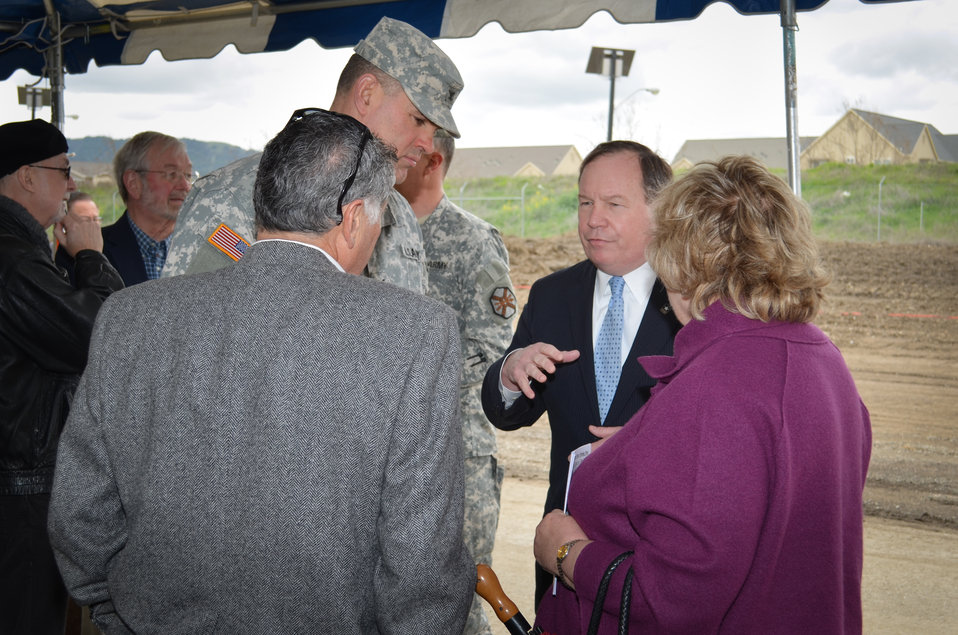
Chief Executive Officer for the U.S. Army Reserve Command

Mr. Addison 'Tad' Davis, IV (center), Chief Executive Officer for the U.S. Army Reserve Command, chats with Col. Bill Leady (left), Commander of the U.S. Army Corps of Engineers Sacramento District, during a groundbreaking ceremony March 6, 2013, at the U.S. Army Garrison Camp Parks Reserve Training center in Dublin, Calif.
The district's real estate office is overseeing a 180-acre transfer of land in exchange for an estimated $66 million in modern facilities for Camp Parks over the next several years. Representatives from the district attended a groundbreaking ceremony commemorating the first of six phases of construction, which is the largest Army Reserve real property exchange agreement in Department of Defense history.